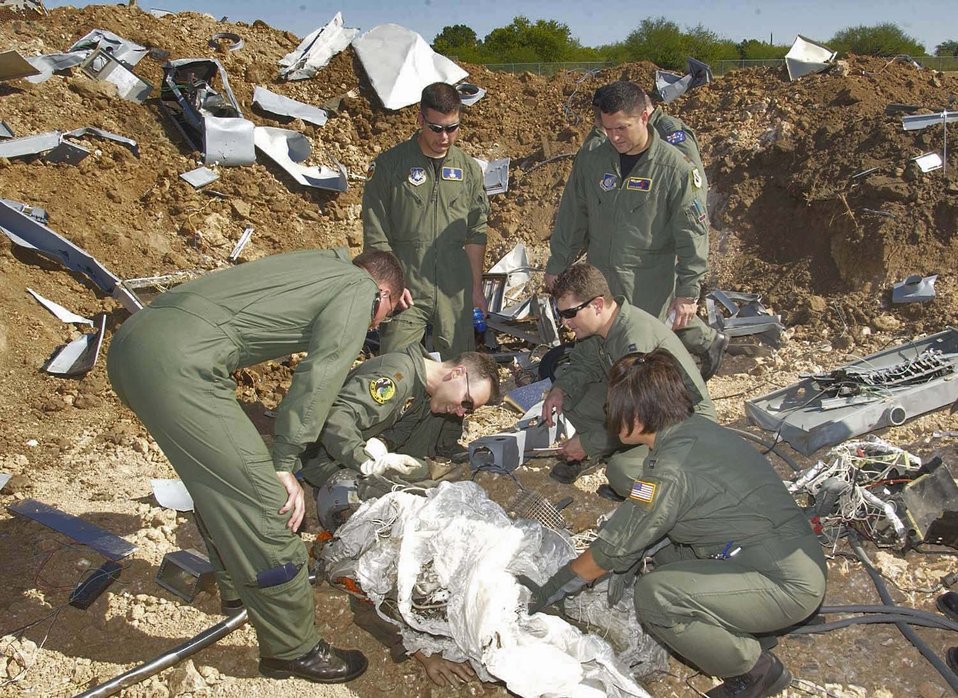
Mishap investigation course changes

BROOKS CITY-BASE, Texas (AFPN) -- Students of the Aircraft Mishap Investigation and Prevention course at the U.S. School of Aerospace Medicine sift through the